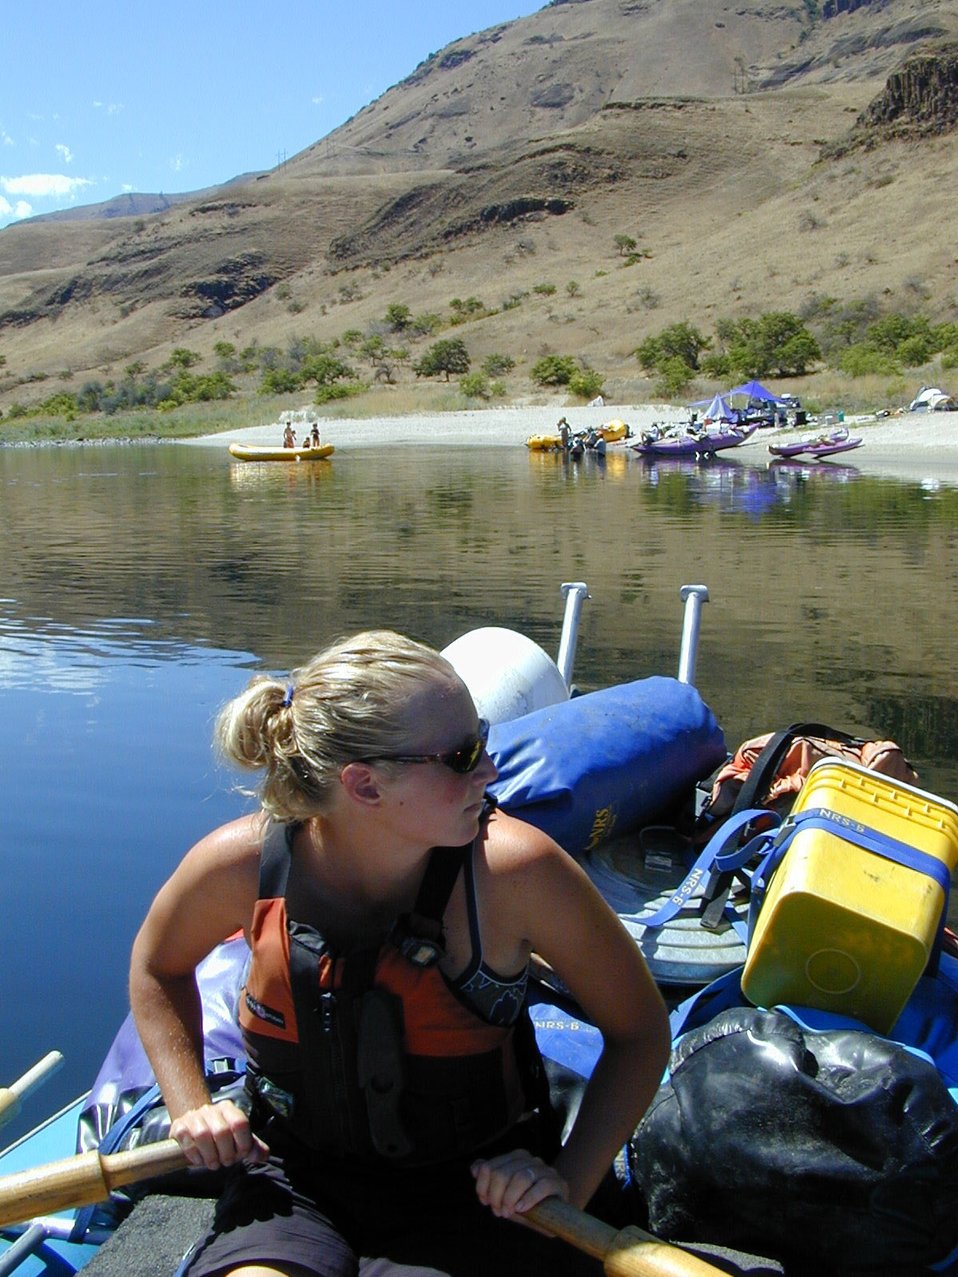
Recreation Rafting on Lower Salmon River Cottonwood Field Office UCSC Upper Columbia Salmon Clearwater District